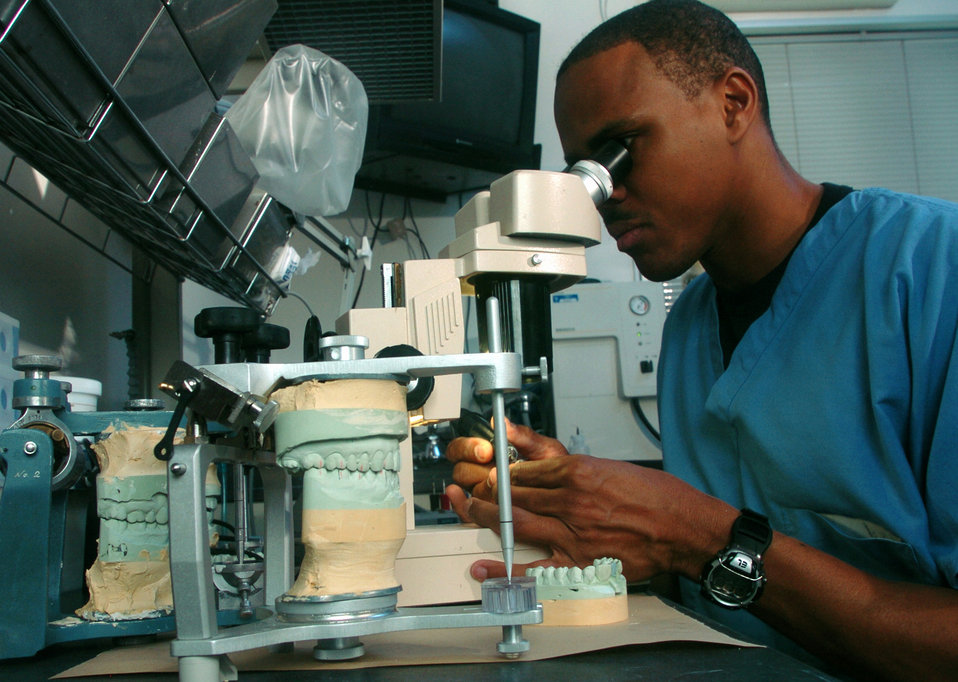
Dental lab techs keep Pacific forces smiling

YOKOTA AIR BASE, Japan -- Tech. Sgt. Keith Kinmon uses a microscope to look for imperfections on a crown at his clinic here. He is a dental laboratory technician assigned to the 374th Dental Squadron here. The Airmen ensure maximum wartime readiness of Pacific Command people by providing comprehensive dental care for the active-duty servicemembers and other eligible beneficiaries.